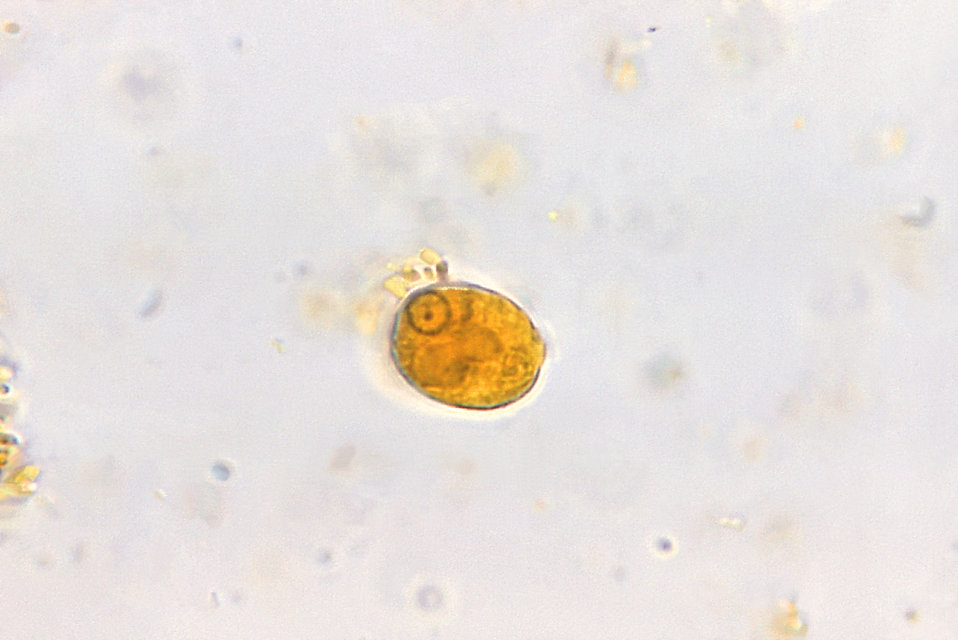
Entamoeba histolytica cyst.